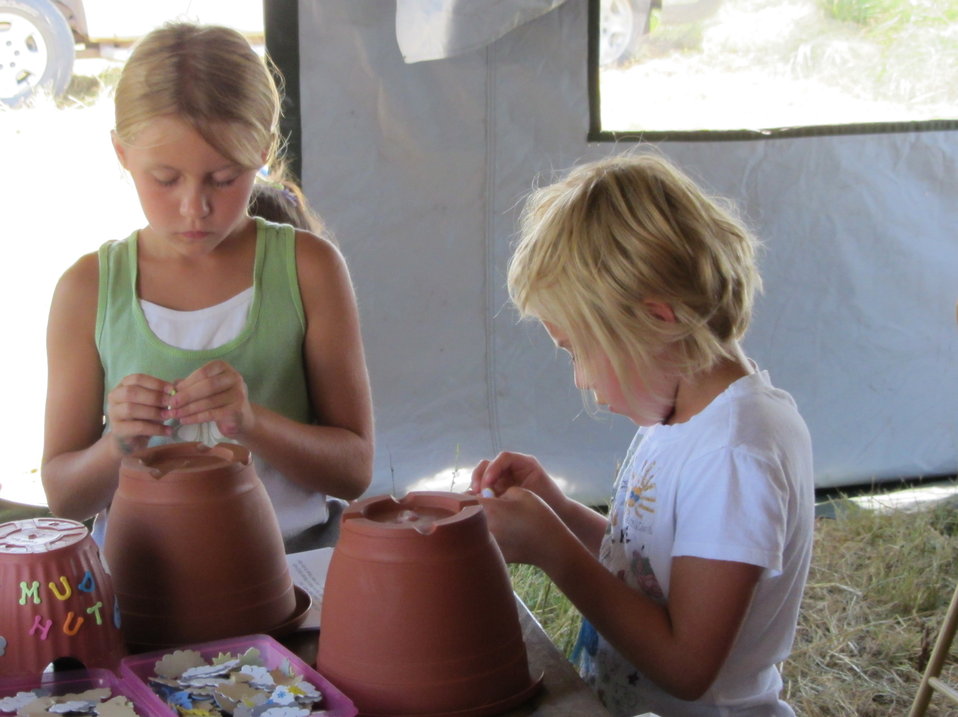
2011 Huron Prairie Fest